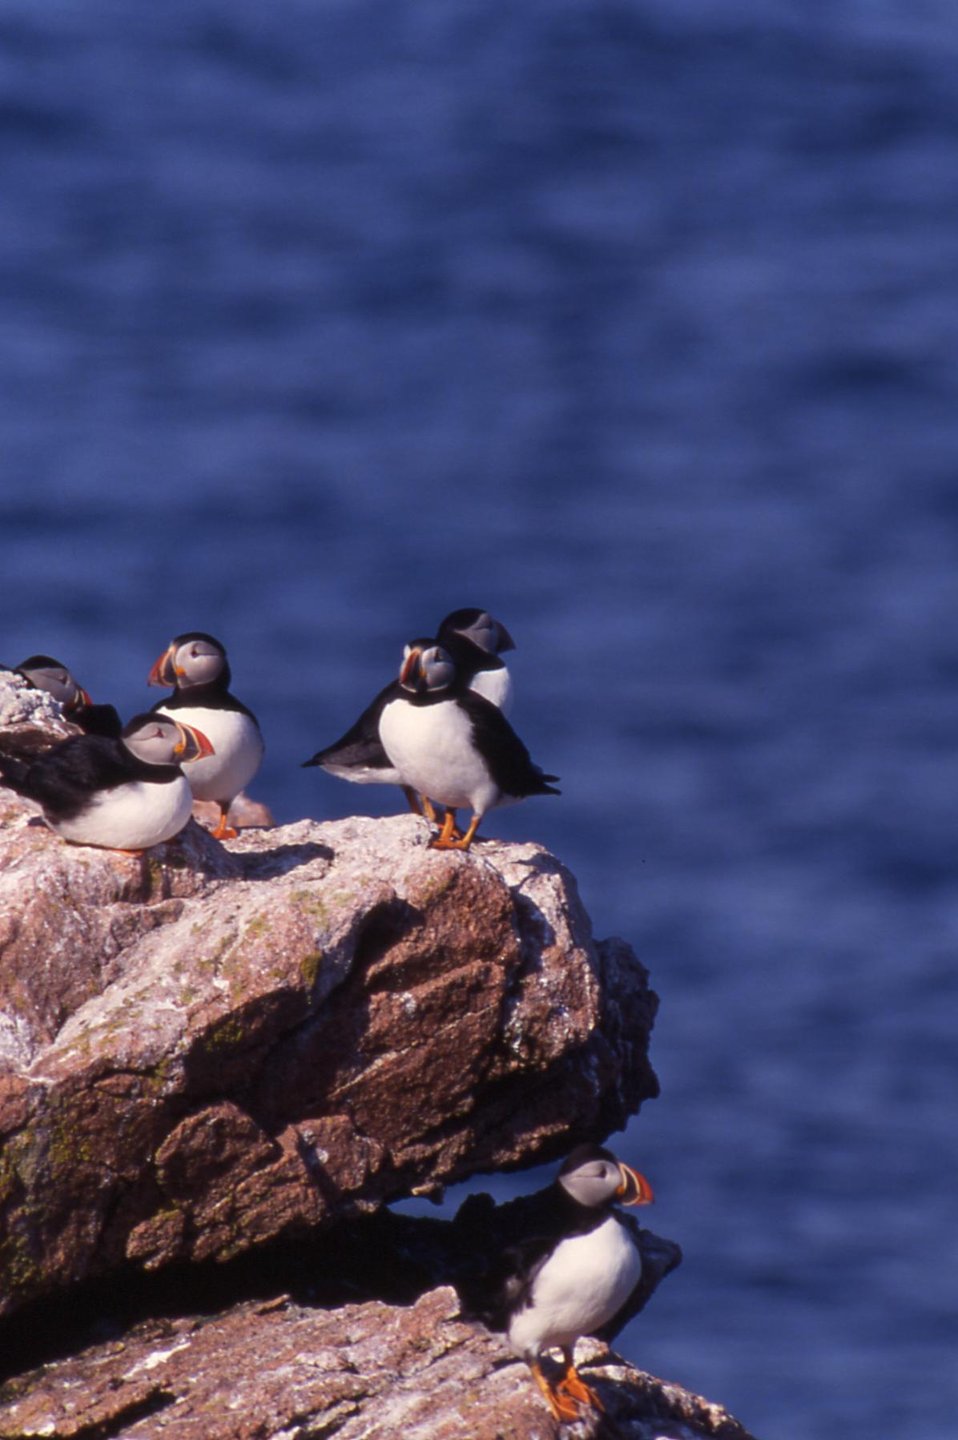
Atlantic puffins at Maine Coastal Island National Wildlife Refuge